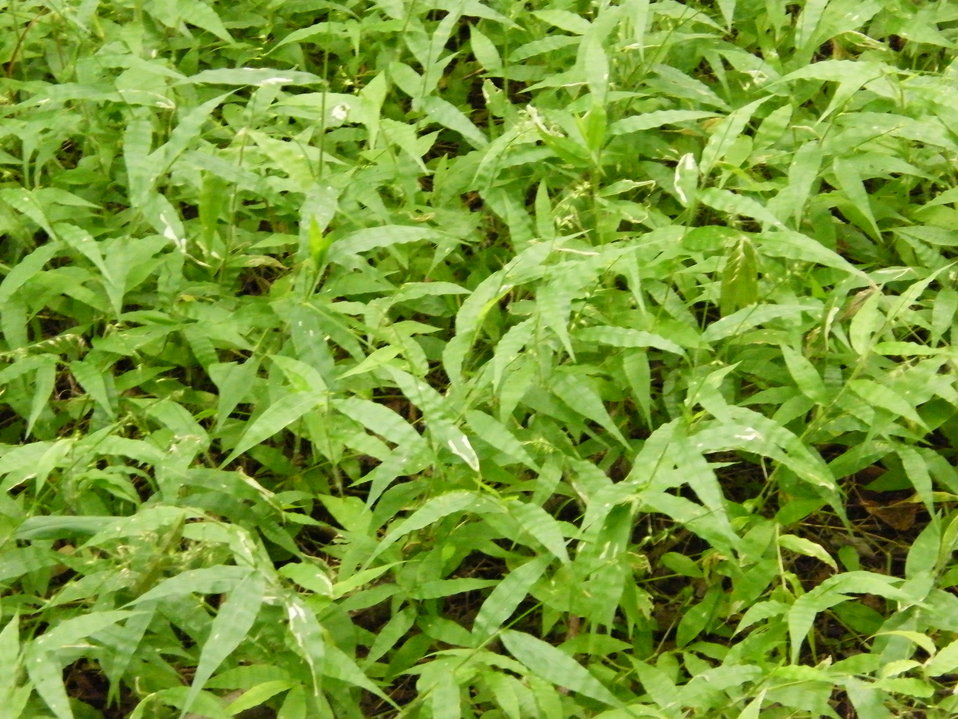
Invasive wavyleaf basketgrass covers part of the forest floor in the South River Greenway in Maryland